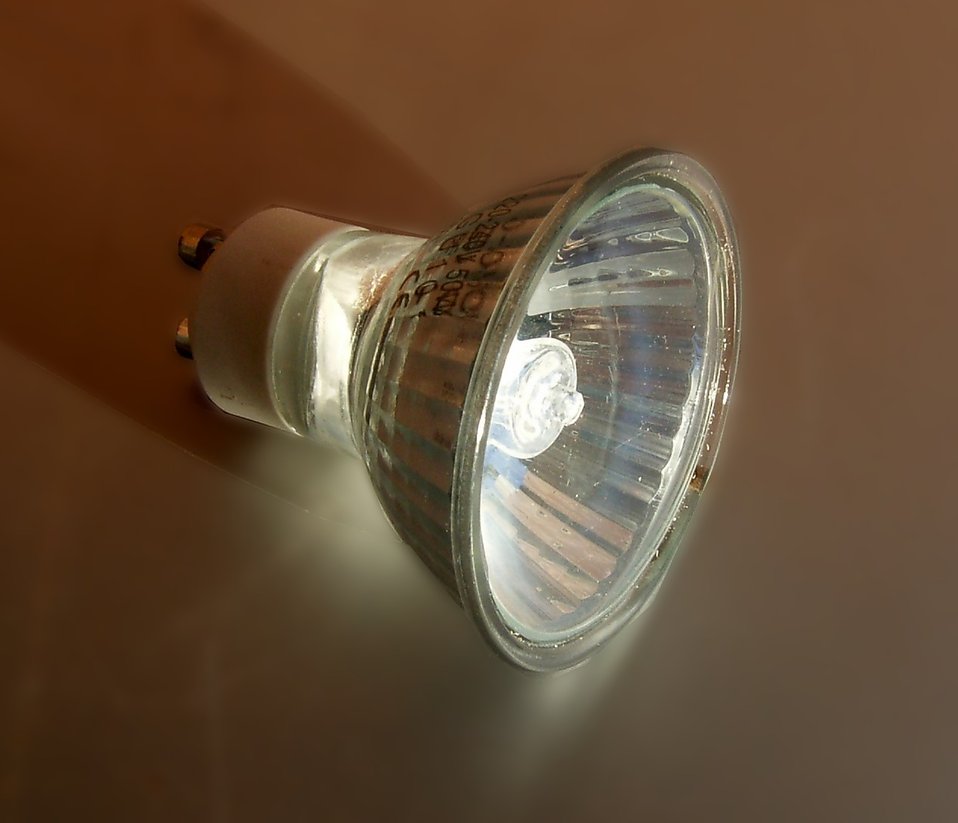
A photo of a G9 globe.